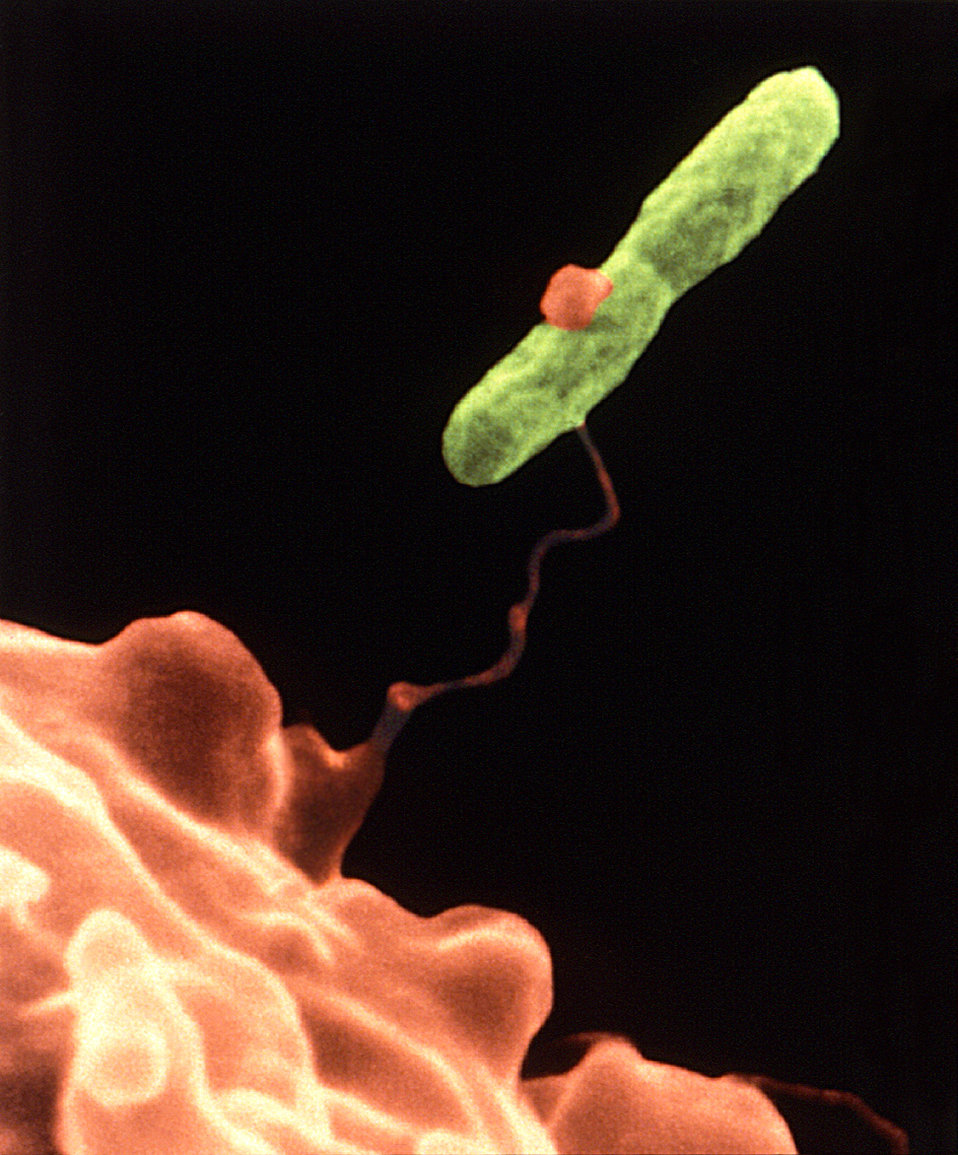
This electron micrograph depicts an amoeba, Hartmannella vermiformis (orange) as it entraps a Legionella pneumophila bacterium (green) with an extended pseudopod